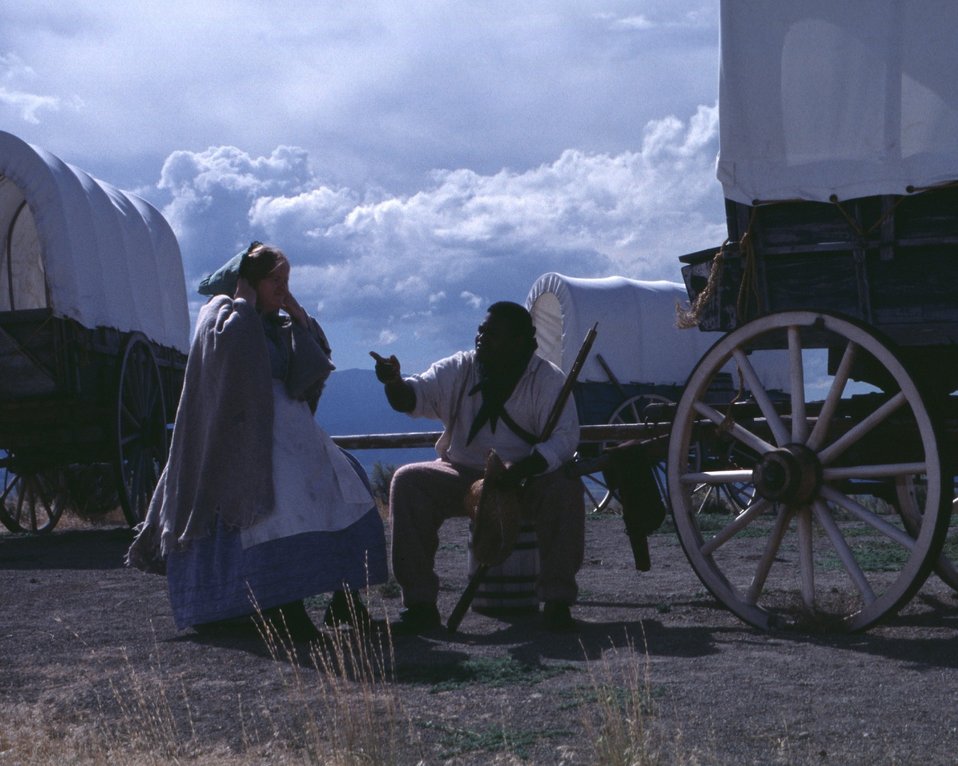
Nancy Harms and Dylan Prichertt portray pioneer woman and a black pioneer at an Oregon Trail wagon encampment.